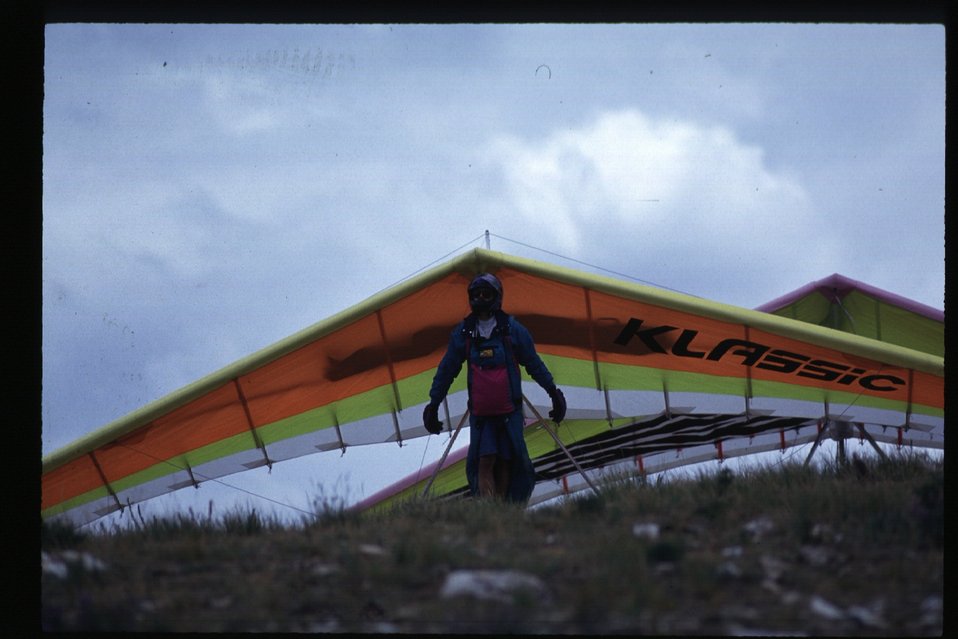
Hang Gliders on King Mountain Arco Idaho Idaho Falls Field Office USRD Upper Snake River District